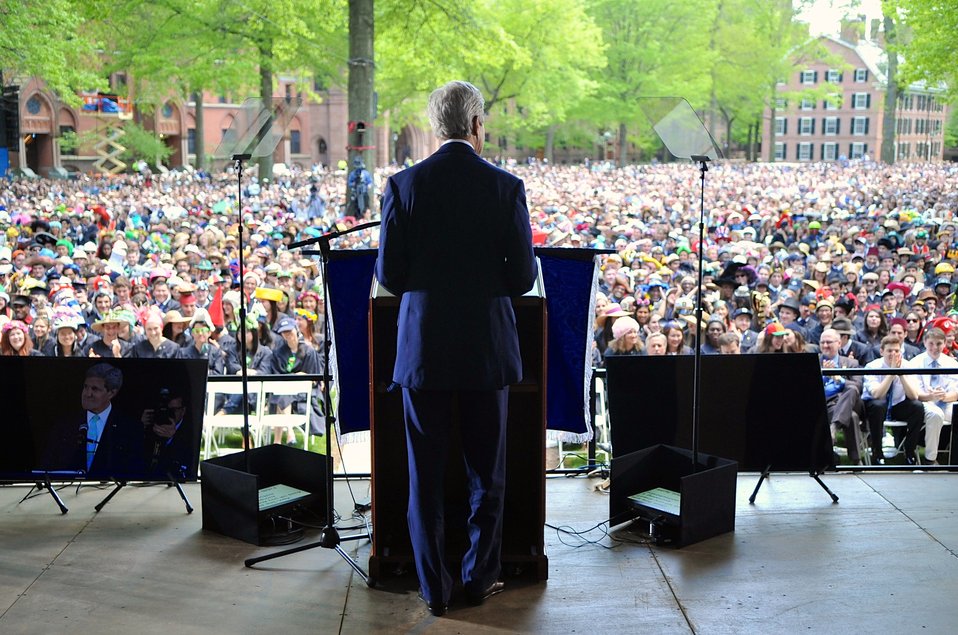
Secretary Kerry Addresses Graduates During Yale University's Class Day Ceremonies

U.S. Secretary of State John Kerry addresses graduates and their families and friends at Yale University as the 1966 graduate delivers a Class Day speech on the campus in New Haven, Connecticut on May 18, 2014.